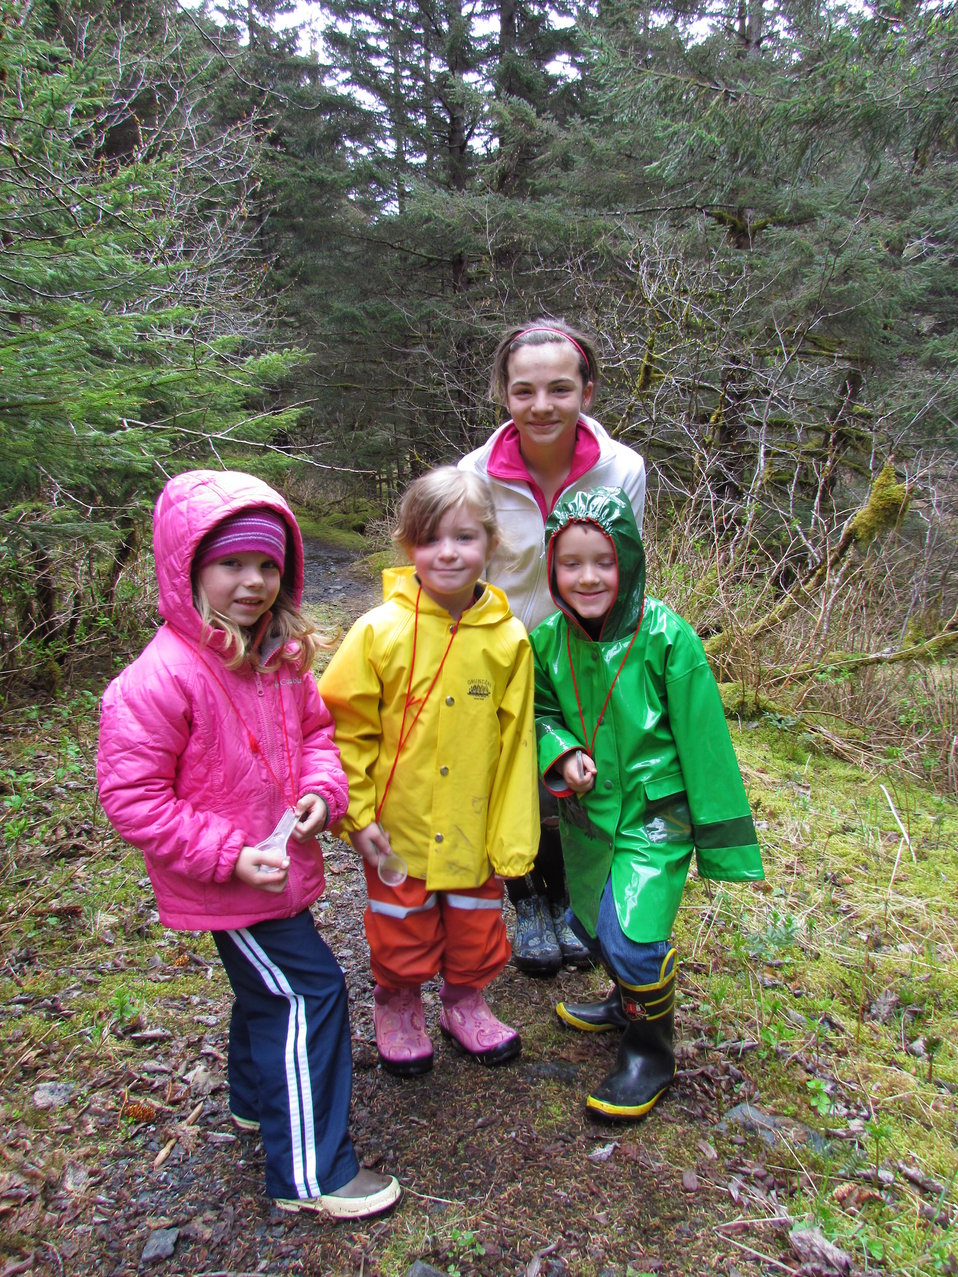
Volunteer with Salmon Campers

Photo Credit: USFWS
Source: Kodiak NWR
Kodiak Refuge hosts a youth leadership program for volunteers 7th-12th grade to assist our staff as instructor aides for our annual science camp.